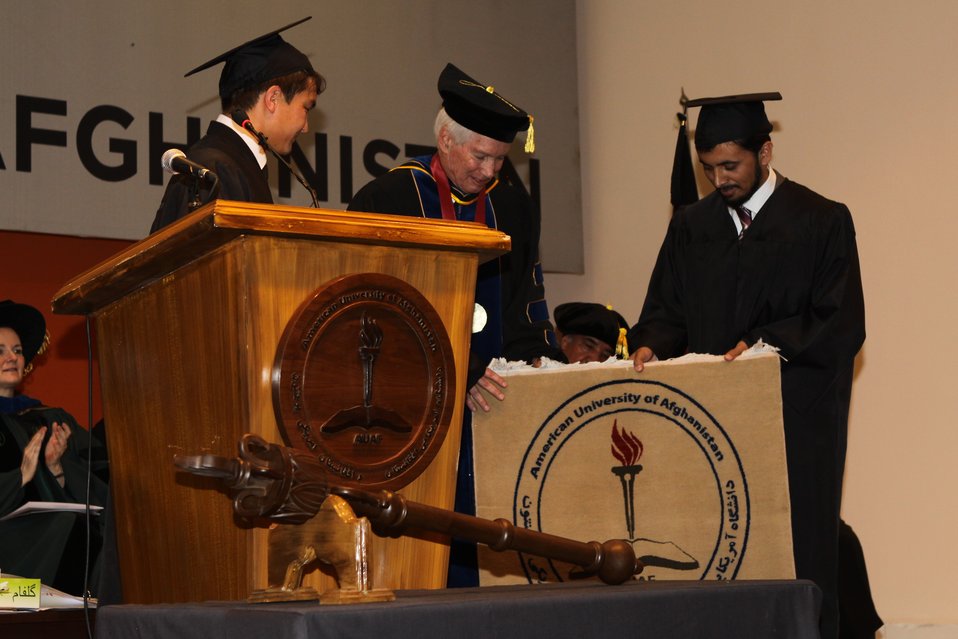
100526 AUAF Graduation 314